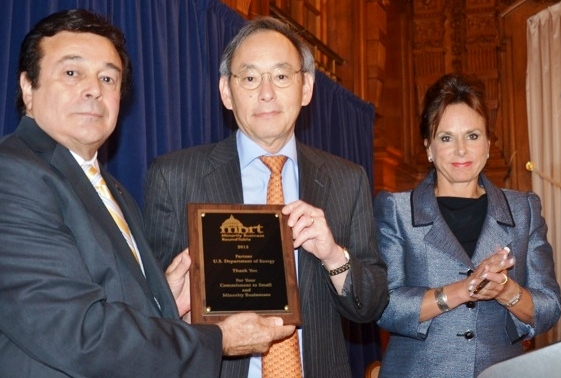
Minority Business RoundTable

On July 26, 2012, the Minority Business RoundTable awarded Secretary Chu the Federal Partner Award for esteemed service to small businesses.